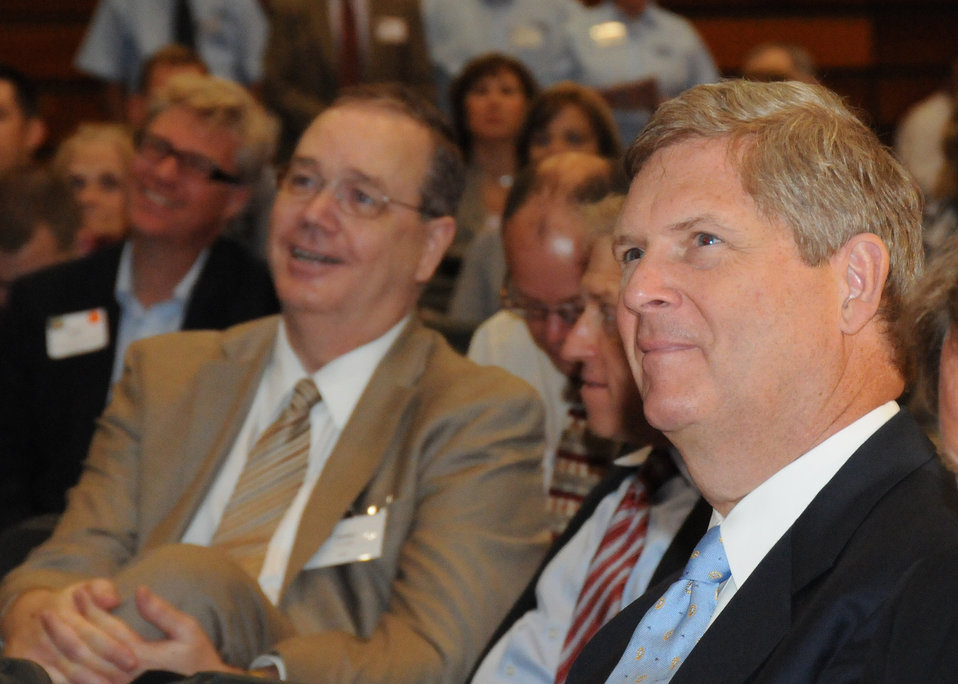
Agriculture Secretary Tom Vilsack (right) and Undersecretary for Rural Development Dallas Tonsinger listen to speakers at the Rural Summit held at Jefferson College in Hillsboro, MO., on Thursday, June 3, 2010. USDA photo 10di1387-40.